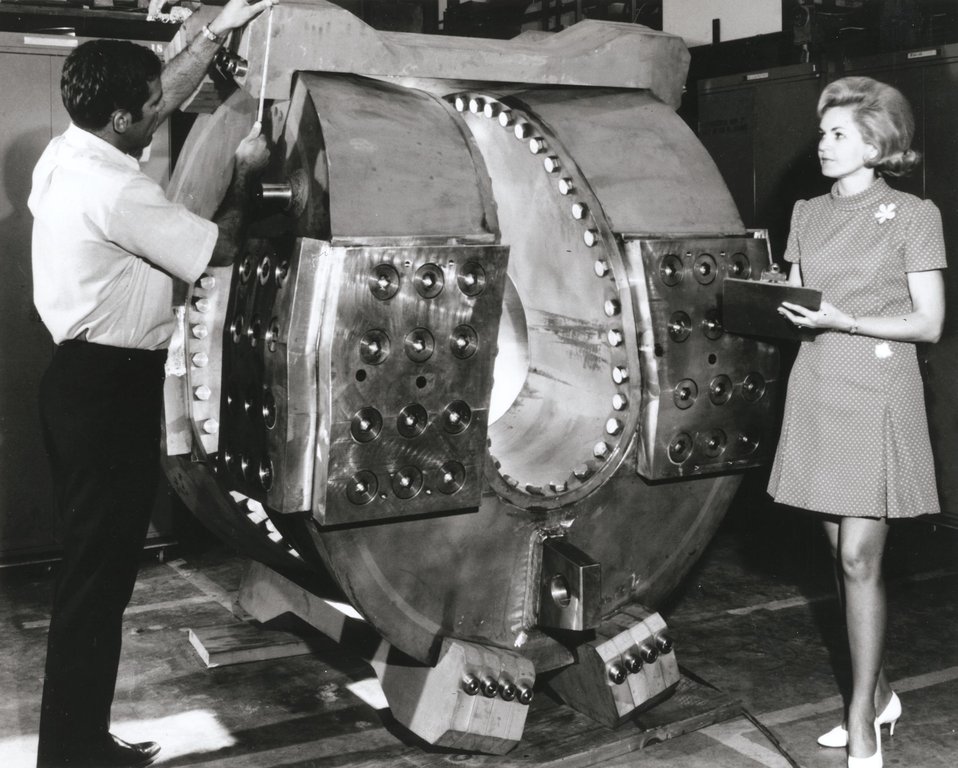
Project engineer, Carl Henning, makes measurements on coil form for the Baseball II superconducting magnet; Secretary Glenda Arvey records measurements. c. 1972